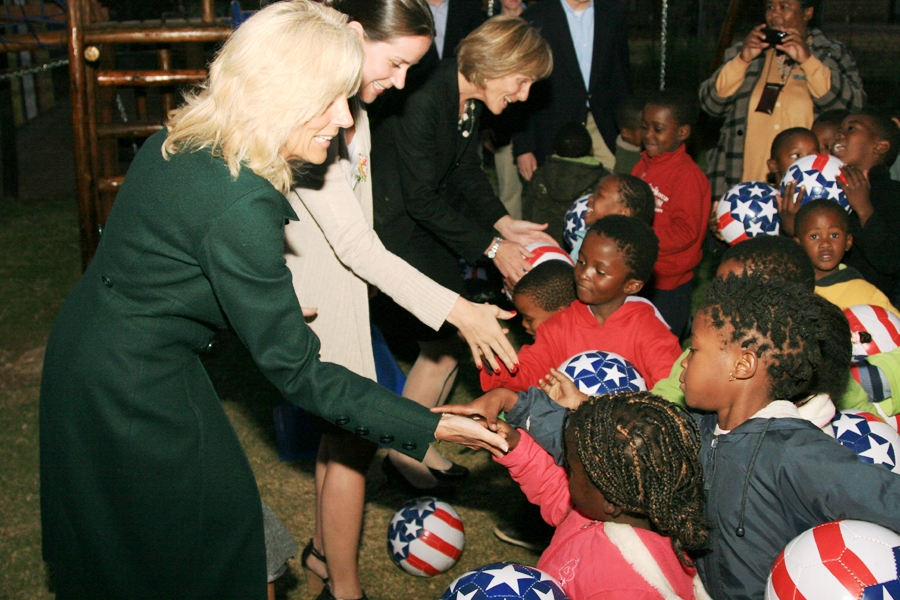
Dr. Jill Biden, Ashley Biden, and Liz Berry Gips Shake Hands With South African Children

(From left to right): Dr. Jill Biden, wife of Vice President Joseph Biden; Ashley Biden, daughter of Vice President and Dr. Biden; and Liz Berry Gips, wife of U.S. Ambassador to the South Africa Donald H. Gips, shake hands with South African children during their visit to the Mapetla Day Care Centre in Soweto, Johannesburg, South Africa, on June 10, 2010.